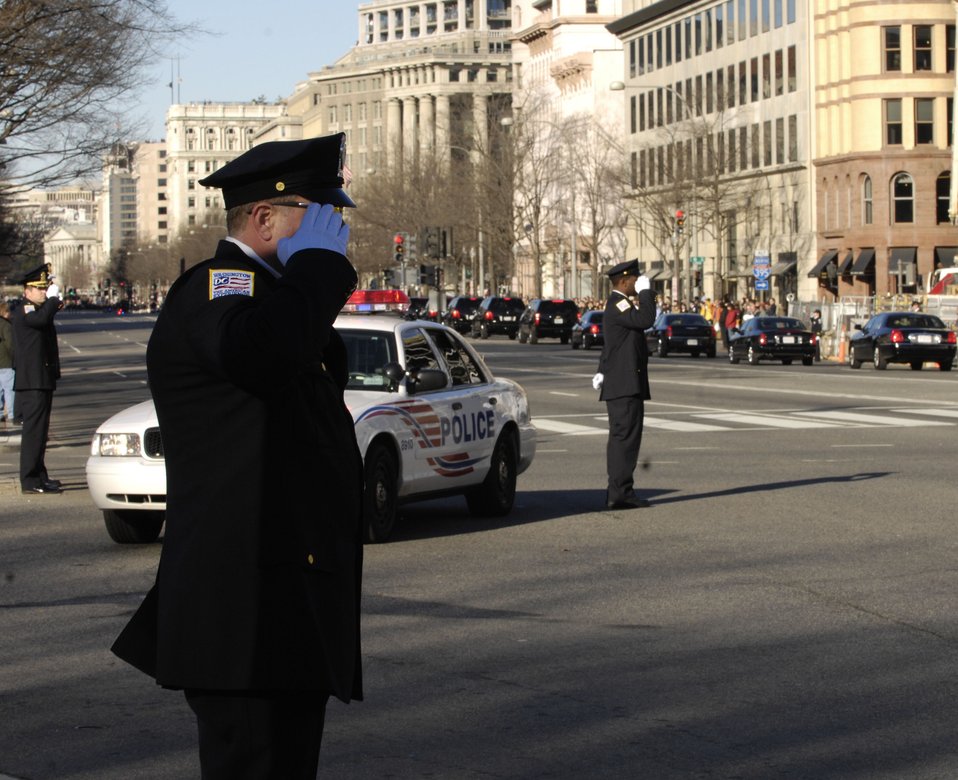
Honor Guard helps lay President Ford to rest

A funeral procession for former President Gerald R. Ford heads to the National Cathedral in Washington, D.C., following his departure from the U.S. Capitol on Jan. 2. The president's final resting place will be in his hometown of Grand Rapids, Mich., at a site just north of the Gerald R. Ford Museum.